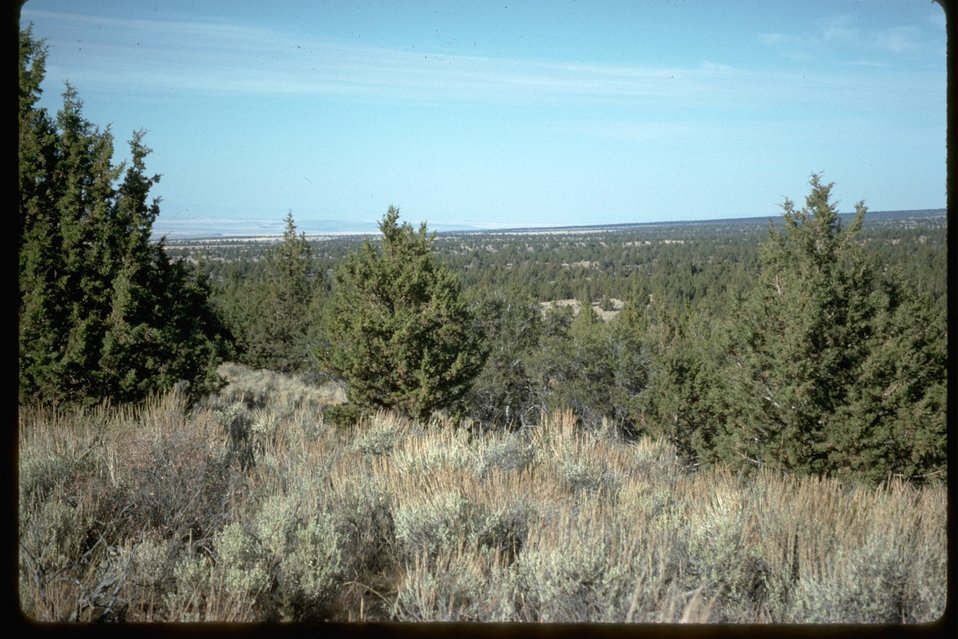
A Juniper stand from North Steens Loop Road.